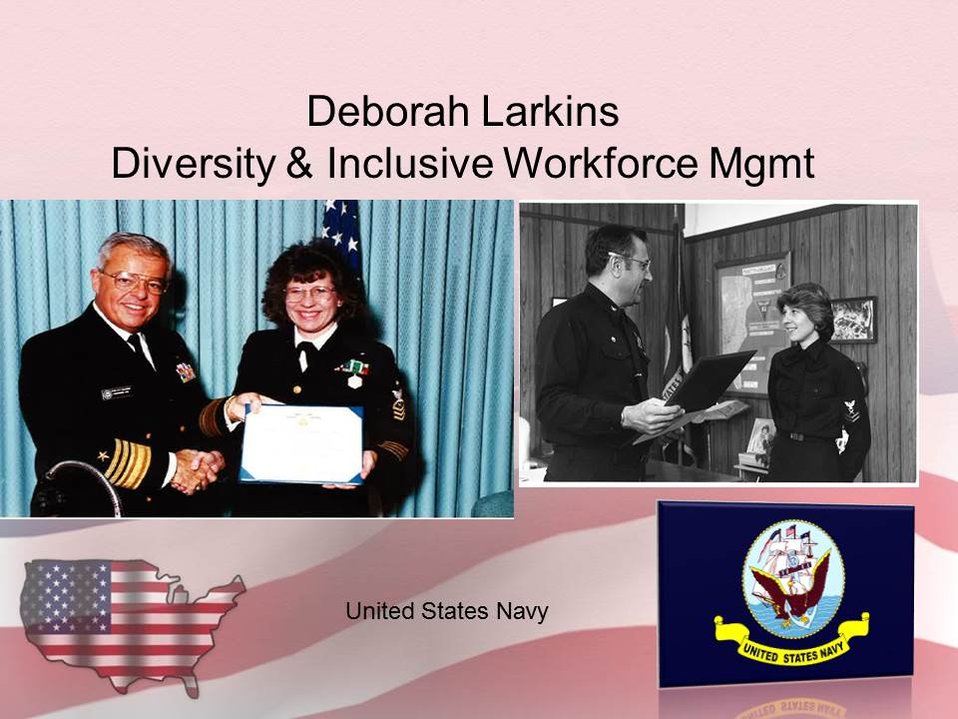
Deborah Larkins